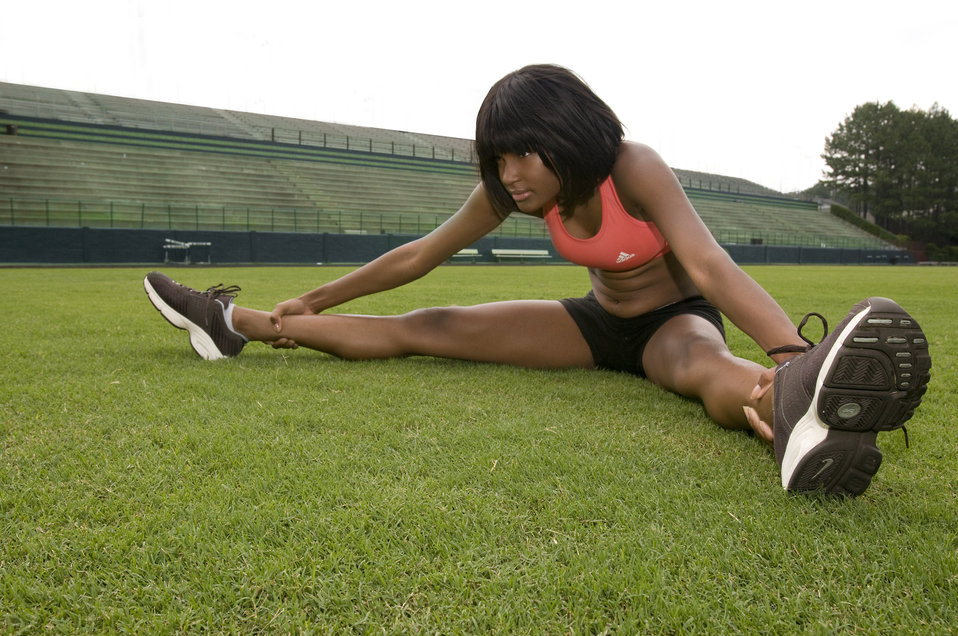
A young woman stretching

Photographed at a Georgia track field, this young woman was in the process of warming up prior to participating in some 'vigorous-intensity aerobic activity' on this sunny day. She was shown here stretching her inner thigh and groin muscles in order to avoid the possibility of a muscle strain-related injury during her exercise routine.